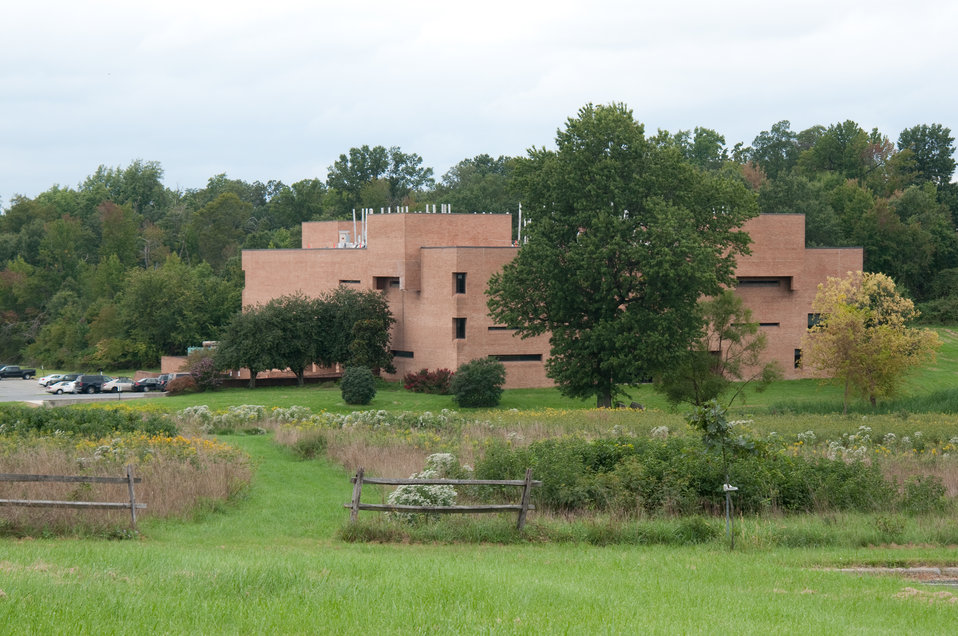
United States Department of Agriculture, Beltsville Agricultural Research Center, Plant Sciences Institute (Building 011A,) in Beltsville, MD, on Wednesday, September 21, 2011.